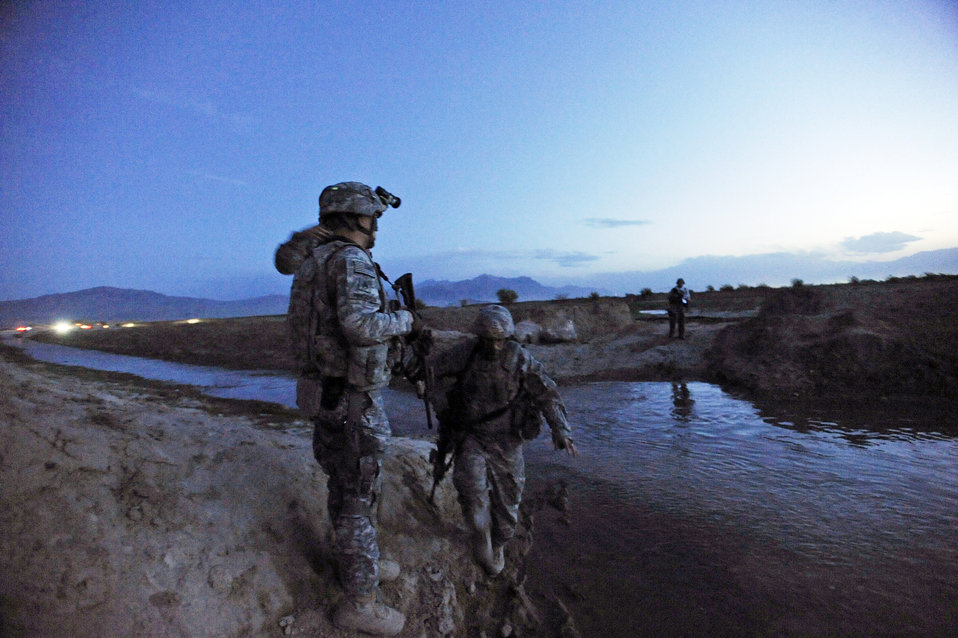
OSI protects Airmen in Afghanistan

Air Force Office of Special Investigations Expeditionary Det. 2405 special agents and Army Soldiers check water depth before driving through during a search and capture mission March 30, 2010, in Parwan Province, Afghanistan.